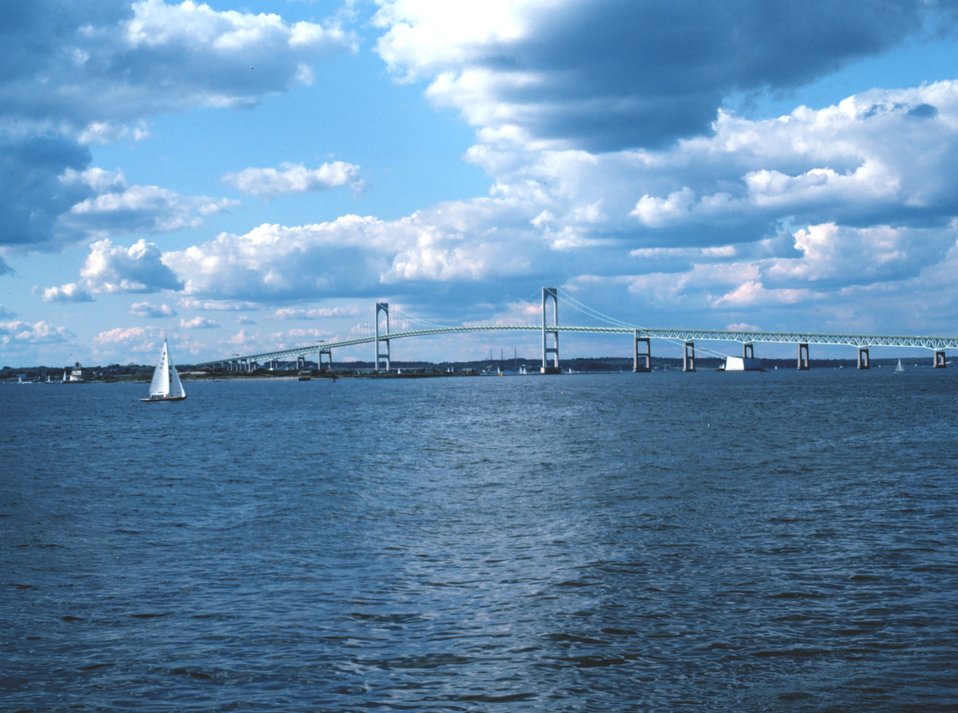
A view of the Newport Bridge